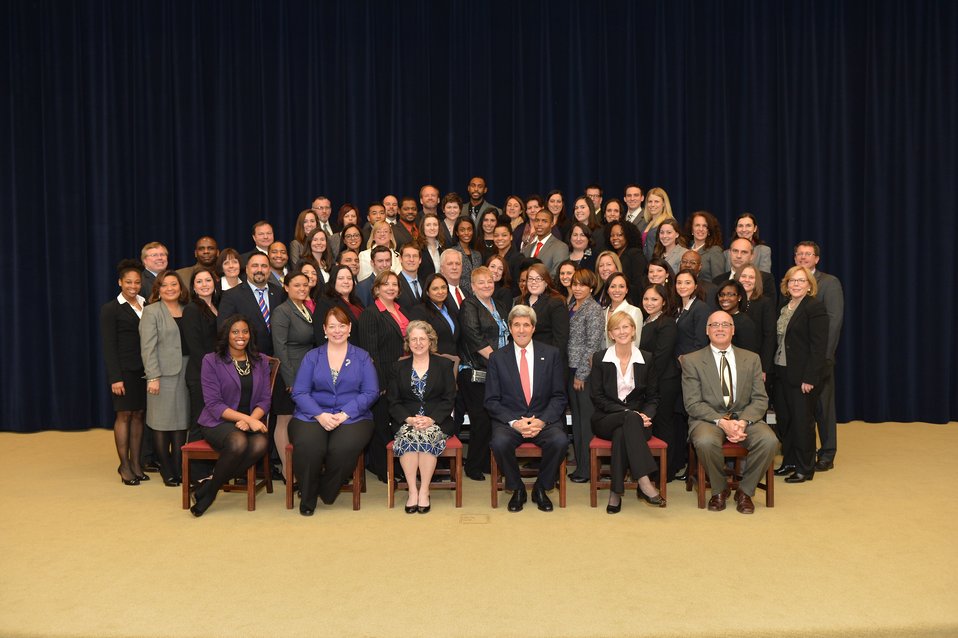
Secretary Kerry Poses for a Photo With a Civil Service Orientation Class

U.S. Secretary of State John Kerry joins a Civil Service Orientation Class for a photo after swearing them in at the U.S. Department of State in Washington, D.C., on January 17, 2014.